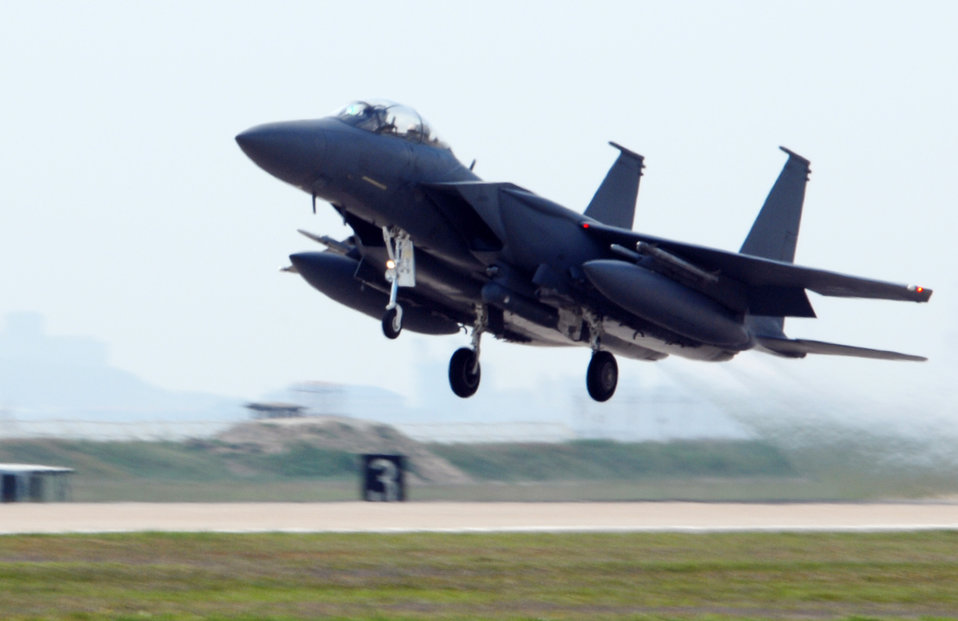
Max Thunder 09-01

A Republic of Korea Air Force F-15K Slam Eagle takes off from Kunsan Air Base, Republic of Korea, May 11 for a training mission during exercise Max Thunder 09-01. The exercise is a 7th Air Force-designed, bilateral training opportunity that aims to test aircrews' warfighting skills in realistic combat situations that combine both ROKAF and U.S. Air Force flying and maintenance personnel.